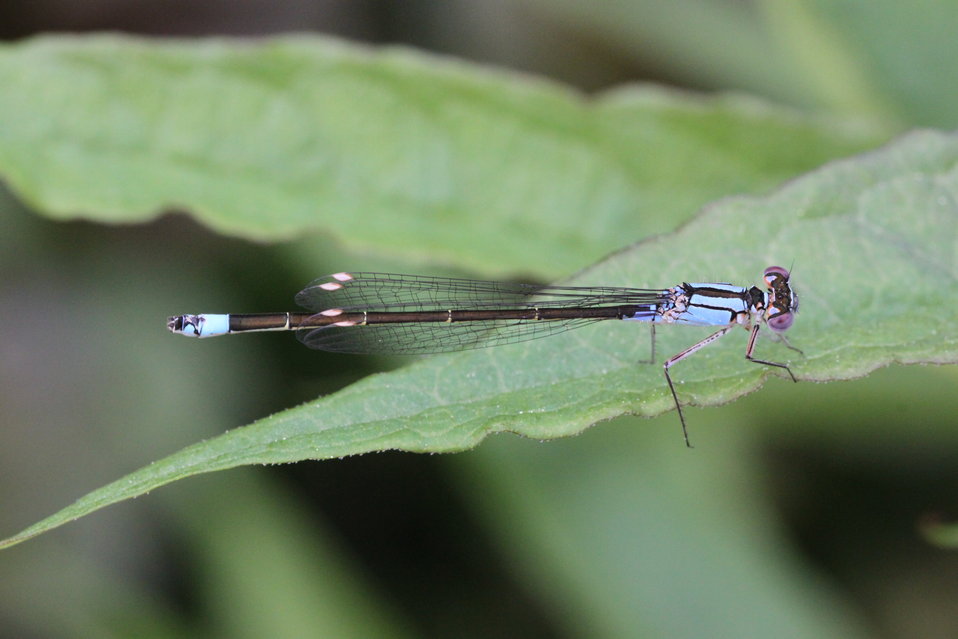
Pacific Forktail

Ischnura cervula (female) resting in Refuge Pollinator Garden.